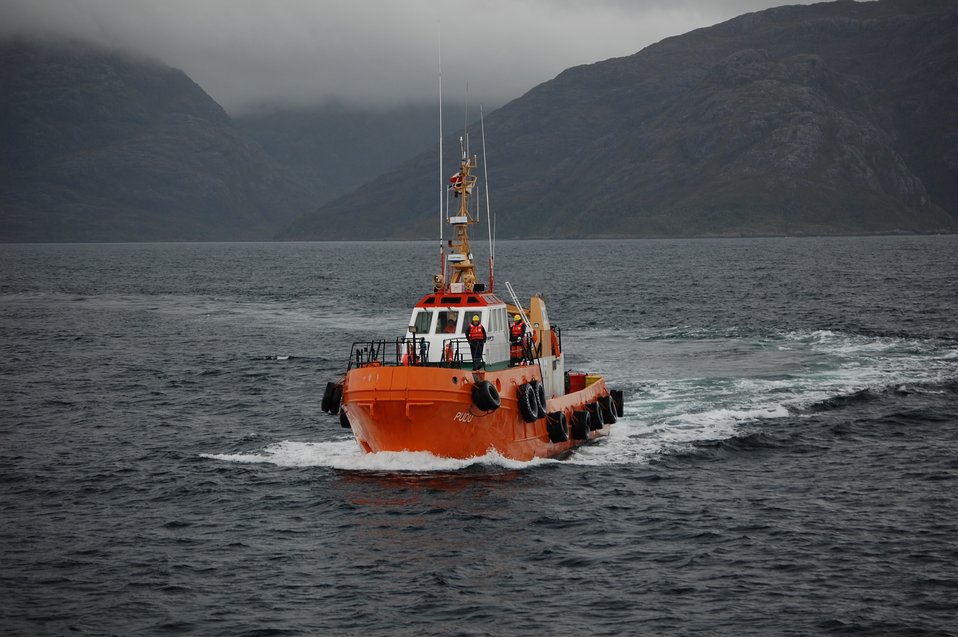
The pilot boat PUDU approaching the NOAA Ship RON BROWN in the Strait of Magellan.